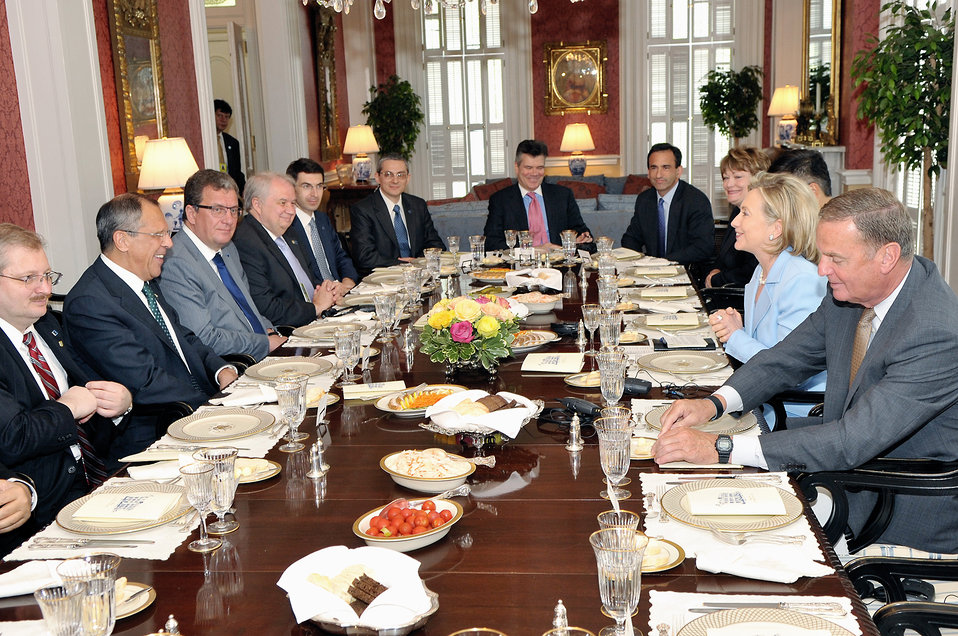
Secretary Clinton Hosts Working Lunch

U.S. Secretary of State Hillary Rodham Clinton hosts a working lunch for Russian Foreign Minister Sergey Lavrov and members of the Russian delegation at the Blair House in Washington, D.C., on June 24, 2010.